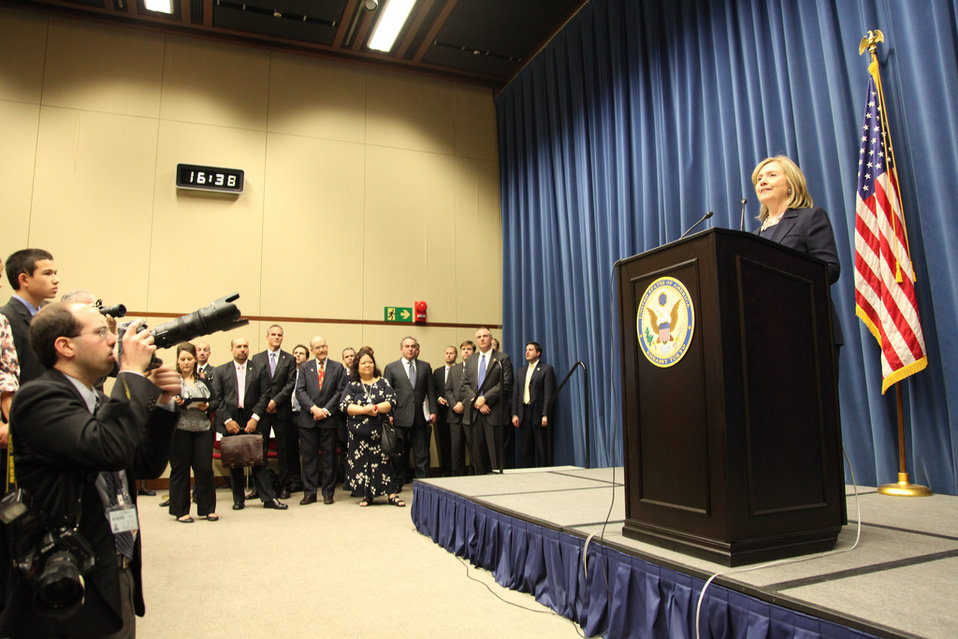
Secretary Clinton Addresses Embassy Japan Staff

U.S. Secretary of State Hillary Rodham Clinton addresses U.S. Embassy in Tokyo, Japan staff and their families in Tokyo, Japan, on April 17, 2011.